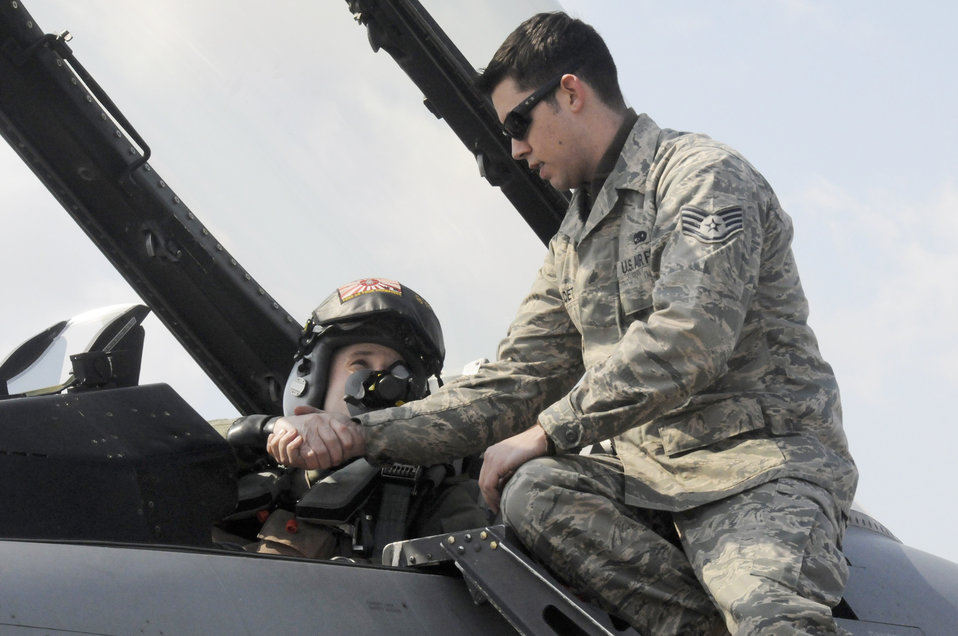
ATR exercise concludes

Staff Sgt. Christopher Audet shakes hands with Capt. Matt Kenkel, prior to takeoff March 11, 2010, at Tsuiki Air Base, Japan. Sergeant Audet is a 35th Maintenance Squadron crewchief. Captain Kenkel is a 14th Fighter Squadron pilot.